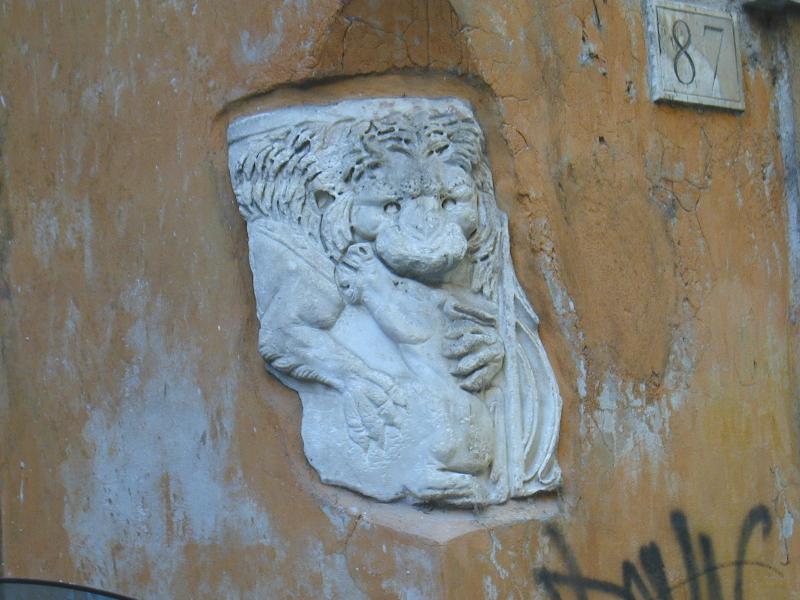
Italiano: Roma, rilievo romano a via dell'Orso